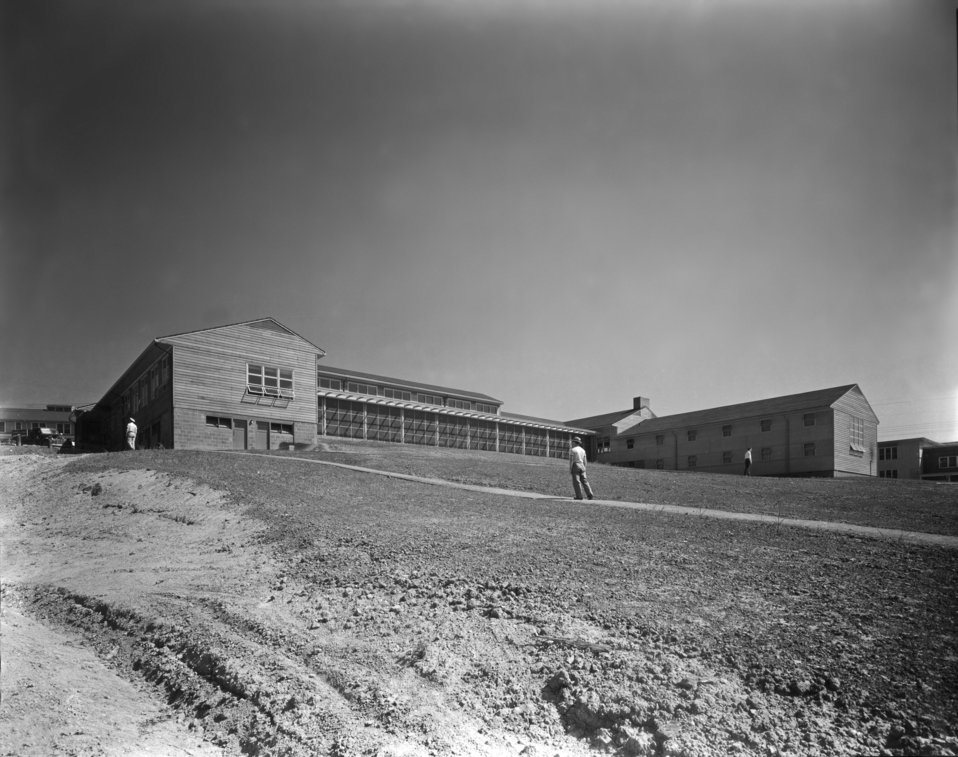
Ridge Recreation Hall and Public Library Oak Ridge

MED132 DOE photo by Ed Westcott

Ridge Recreation Hall and Public Library Oak Ridge Tennessee 1944